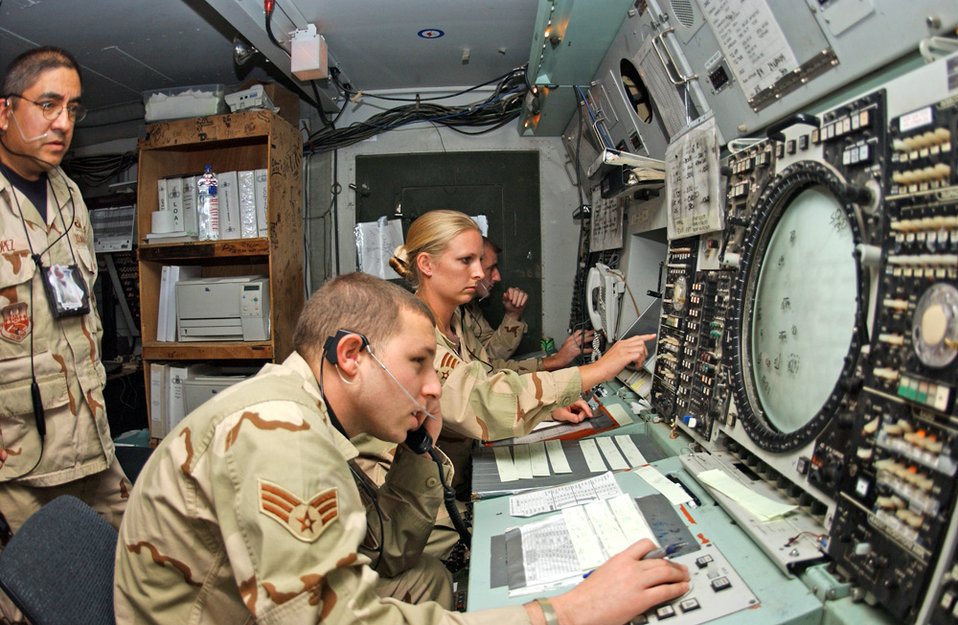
Monitoring air traffic

BALAD AIR BASE, Iraq (AFPN) -- Airmen from the 332nd Expeditionary Operations Support Squadron monitor air traffic here. The Airmen are part of the Combined Enroute Radar Approach.